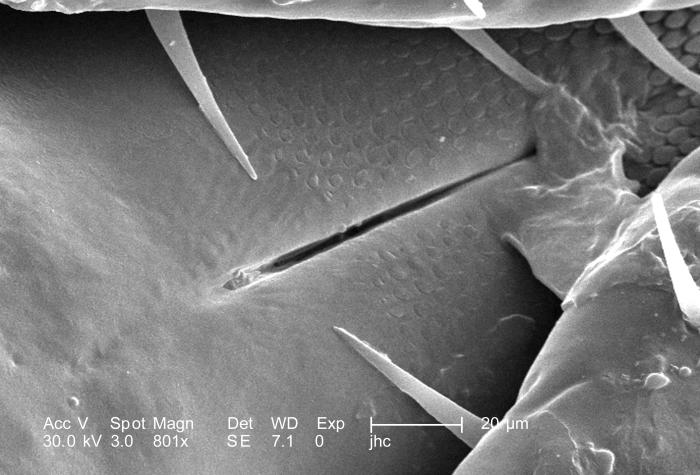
Under a magnification of 801X, this scanning electron micrograph (SEM) depicted a dorsal view of an unidentified male Dermacentor sp. tick found upon a cat in the suburbs of Decatur, Georgia, which measured approximately 3.5mm from its gnathosoma (seen here) (i.e., capitulum), which is where its mouthparts are located, to the distal abdominal margin (PHIL 9961). Note in PHIL 9959 and 9960, that the entire dorsum of this tick's abdomen is covered by its tough 'scutum', or 'shield', categorizing it as a male. In female Ixodid-species ticks, the scutum only partially covers the dorsal abdomen. Seen clearly in this image is the base of the hypostome, which is one of the tick's mouthparts that acts to pierce the host skin surface, thereby, anchoring the tick to the host as it obtains its blood meal. See PHIL 9964 for another view of the foliated hypostomal surface.